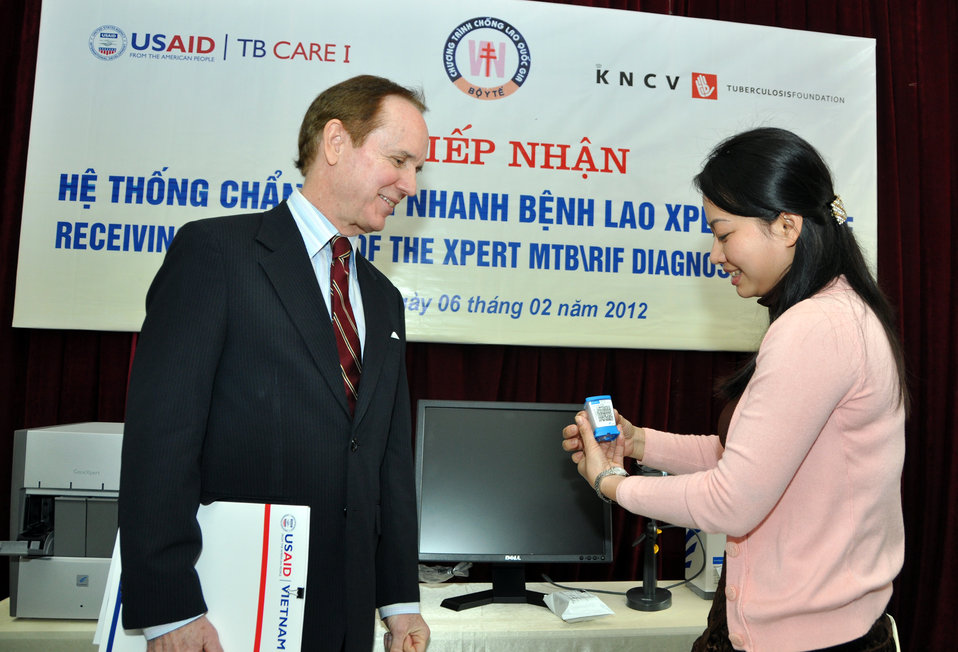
USAID Mission Director Francis Donovan learns how the equipment functions

USAID delivers TB and MDR-TB diagnostic equipment